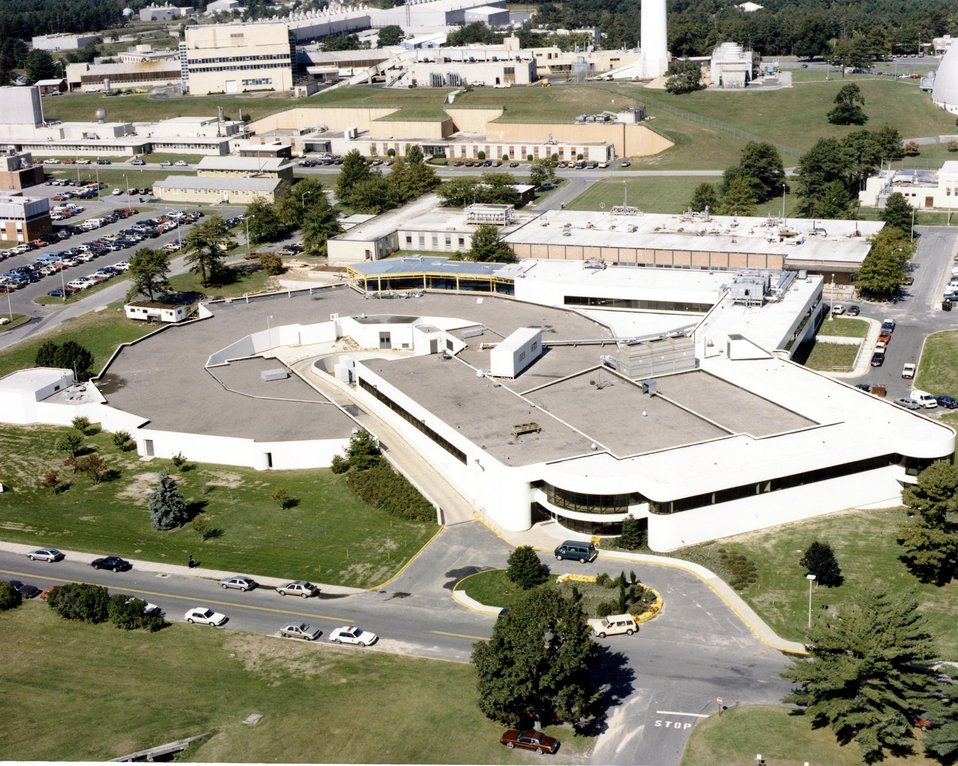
THE NATIONAL SYNCHROTRON LIGHT SOURCE (NSLS) AT BROOKHAVEN NATIONAL LABORATORY IS THE WORLD'S LARGEST FACILITY FOR SCIENTIFIC RESEARCH USING X-RAY'S AND ULTRAVIOLET RADIATION.

DURING THE COURSE OF A YEAR, WELL OVER 2,000 SCIENTISTS FROM ALMOST 300 UNIVERSITIES, INDUSTRIAL CORPORATIONS AND OTHER LABORATORIES USE THE NSLS FOR RESEARCH IN PHYSICS, CHEMISTRY, BIOLOGY AND MATERIALS SCIENCE.